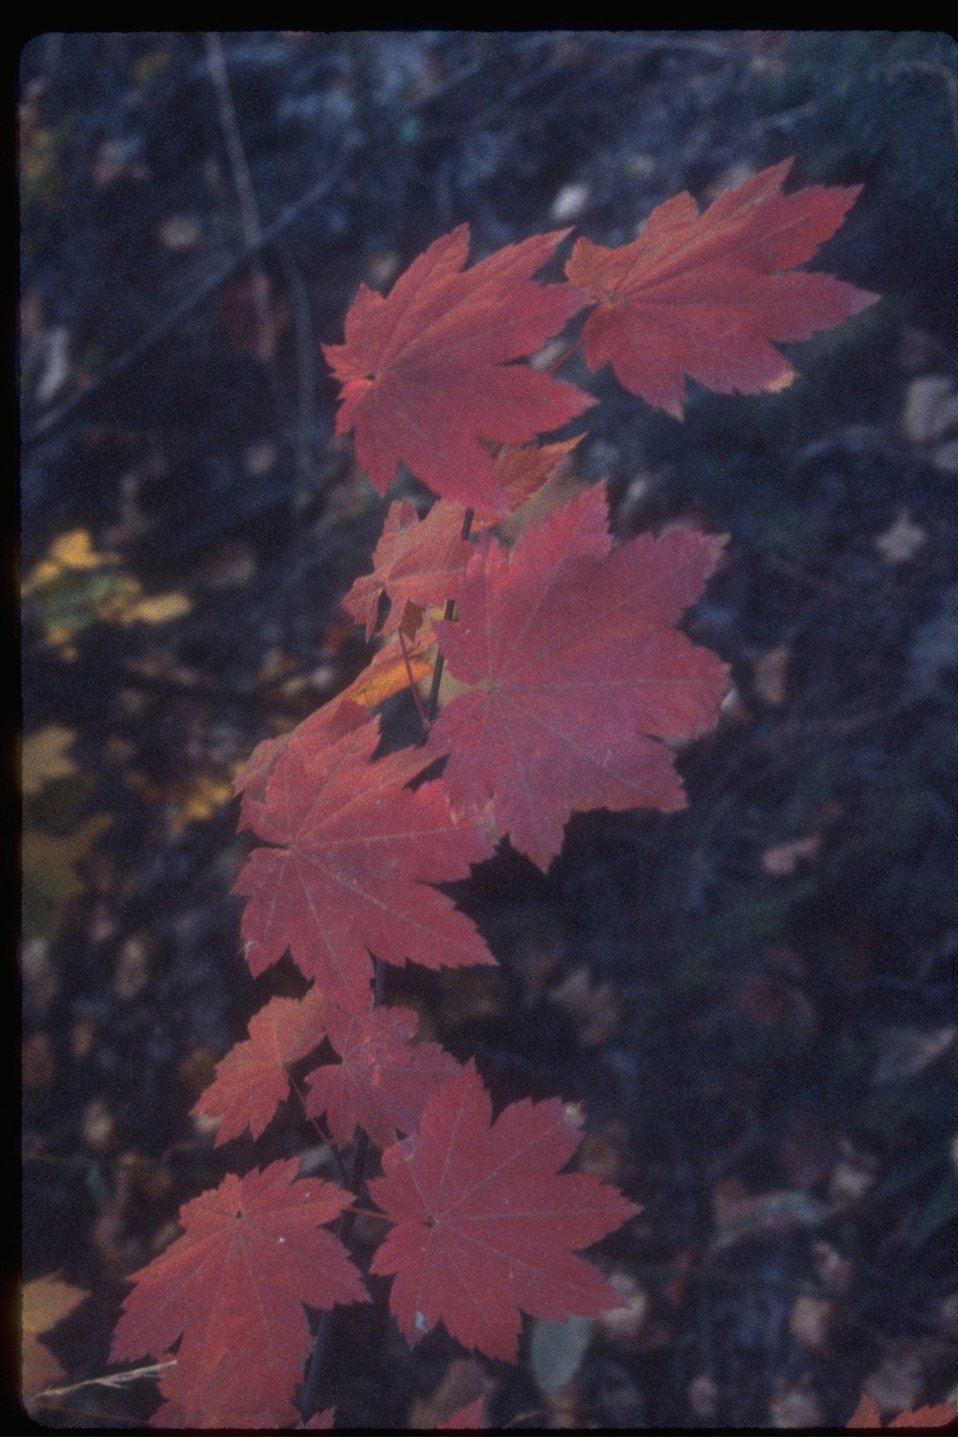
Vine Maple in the Fall.